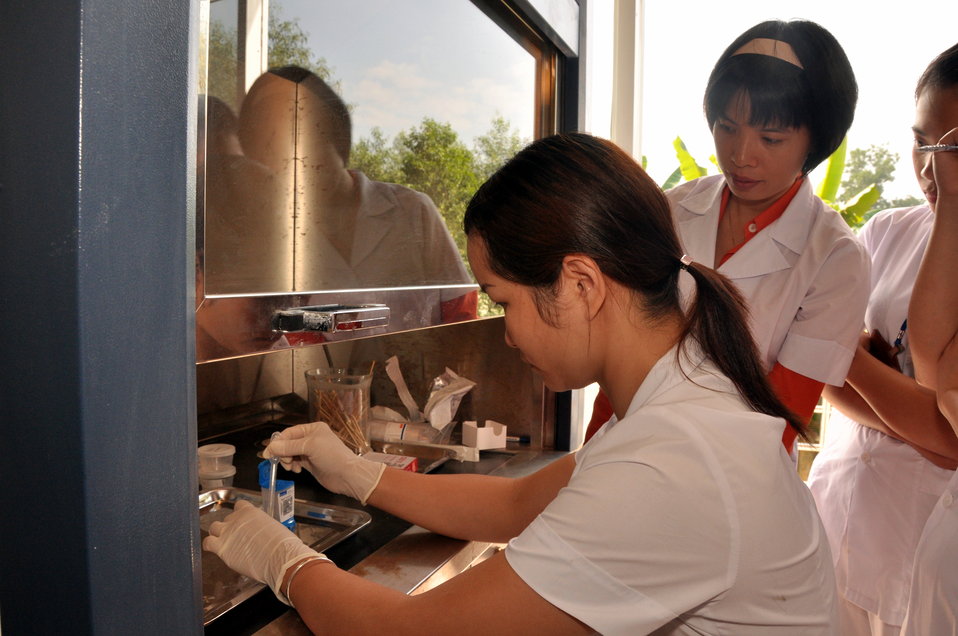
USAID supports new rapid detection TB equipment